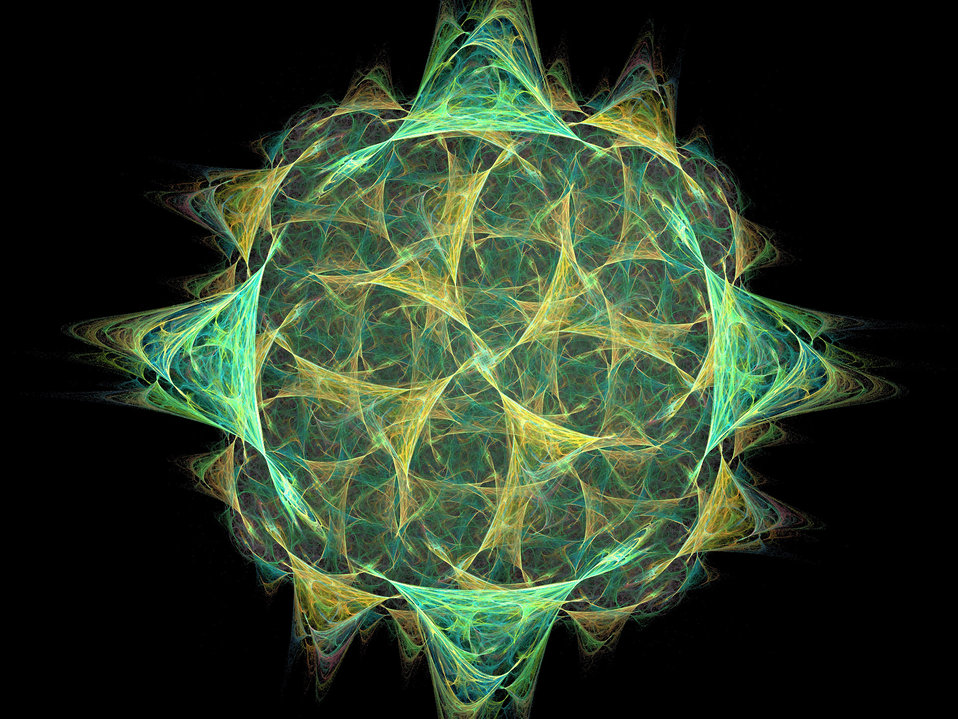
Simply green

Fractal in a simple design.